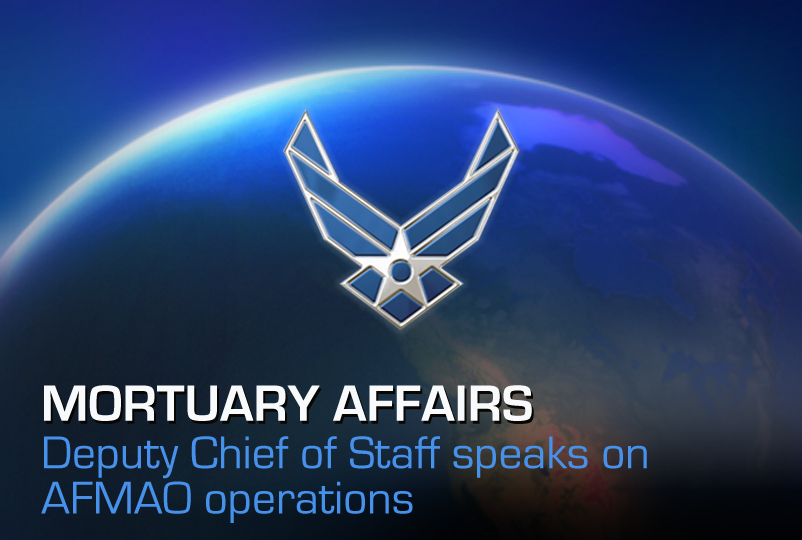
Deputy Chief of Staff speaks on AFMAO operations